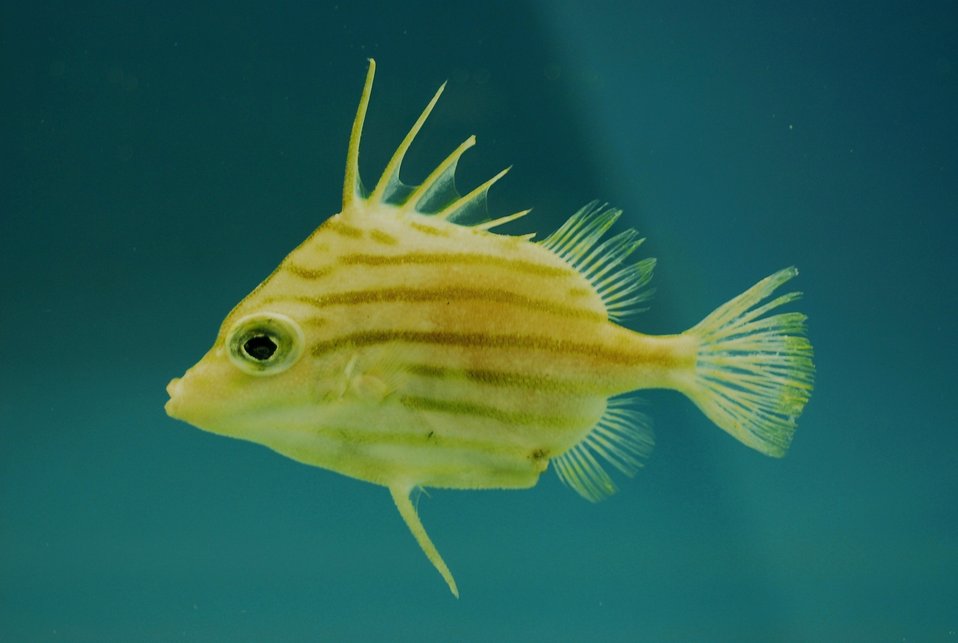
Jambeau ( Parahollardia lineata )